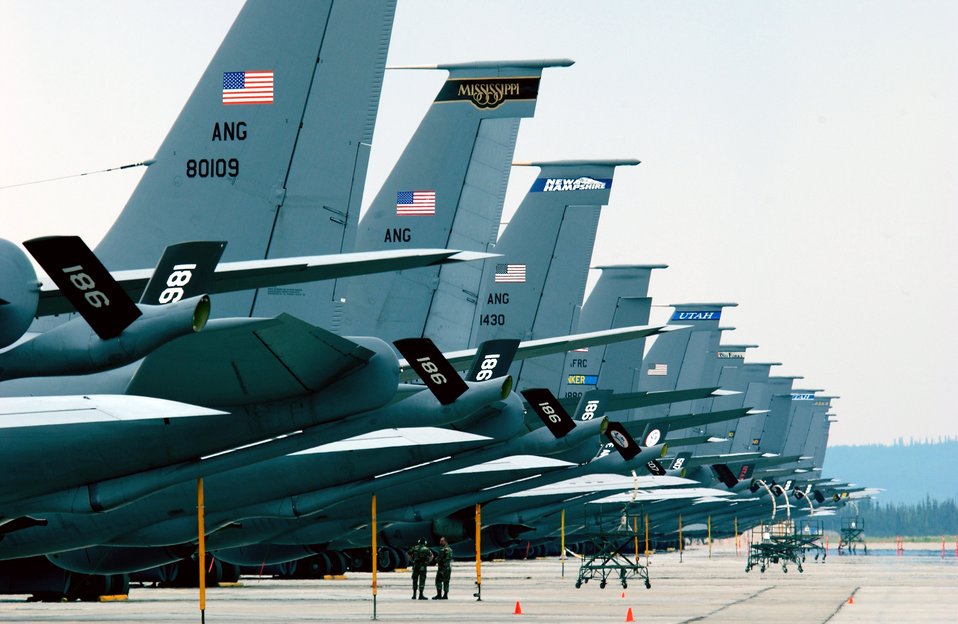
Tanker Task Force keeps Northern Edge flying

Tail markings from various KC-135 Stratotanker units are displayed at Eielson Air Force Base, Alaska, during Exercise Northern Edge 2006, a joint training exercise. It is one of a series of U.S. Pacific Command exercises that prepare joint forces to respond to crises in the Asian Pacific region.